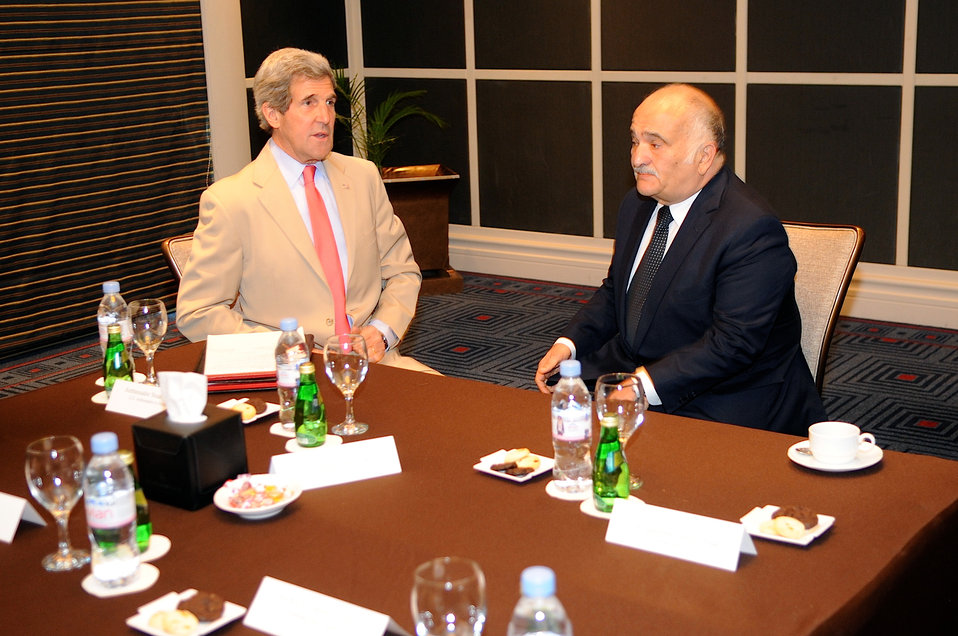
Secretary Kerry Meets With Jordanian Prince El Hassan Bin Talal

U.S. Secretary of State John Kerry meets with Jordanian Prince El Hassan bin Talal in Amman, Jordan, on May 27, 2013.